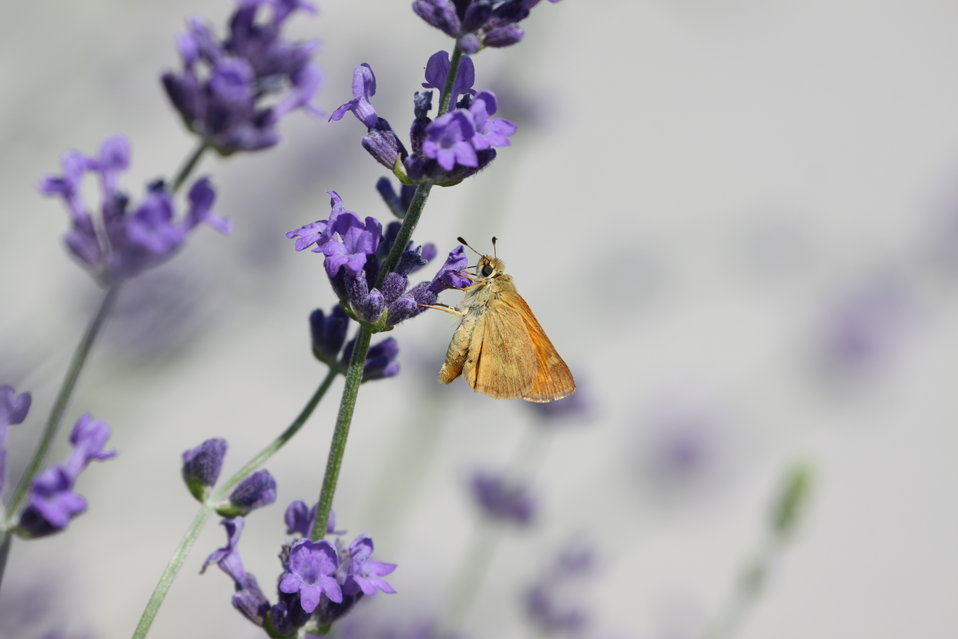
Woodland Skipper

Ochlodes sylvanoides nectaring on lavender in Refuge Pollinator Garden, increasingly common going into fall.